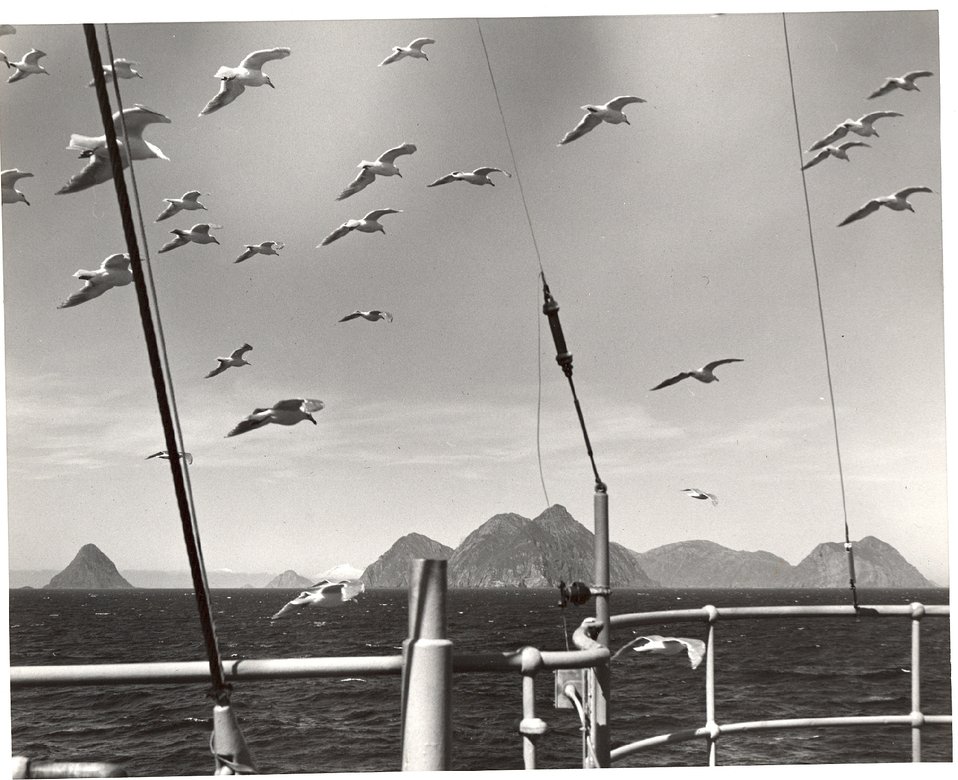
Seagulls flying in formation.